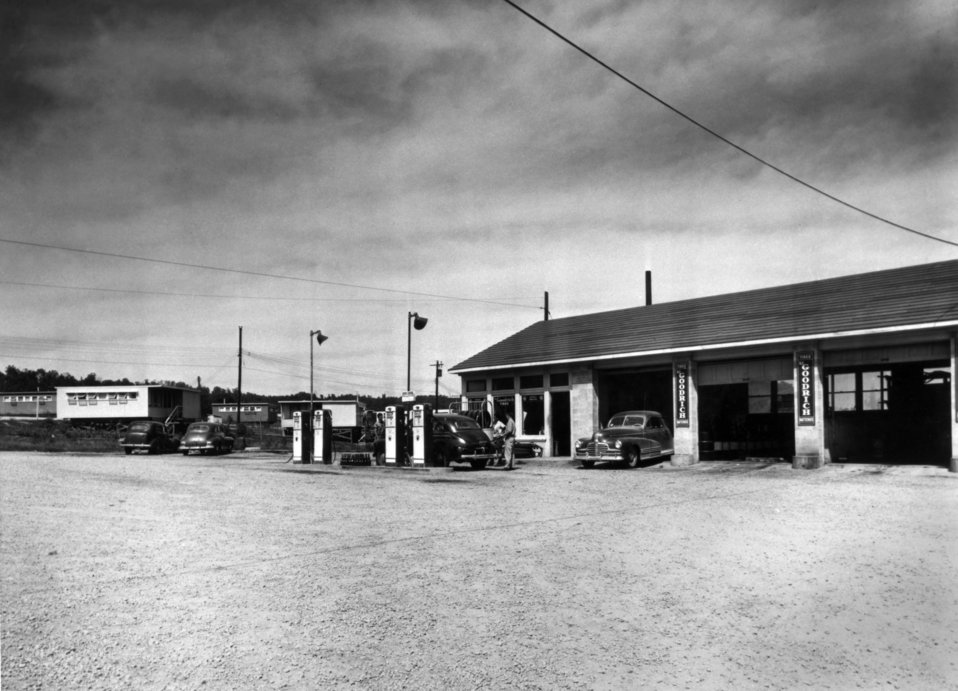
Service Station on Oak Ridge Turn Pike

MED 539 DOE photo by Ed Westcott One of the first service stations in Oak Ridge Area 1-1-1943 Oak Ridge Tennessee